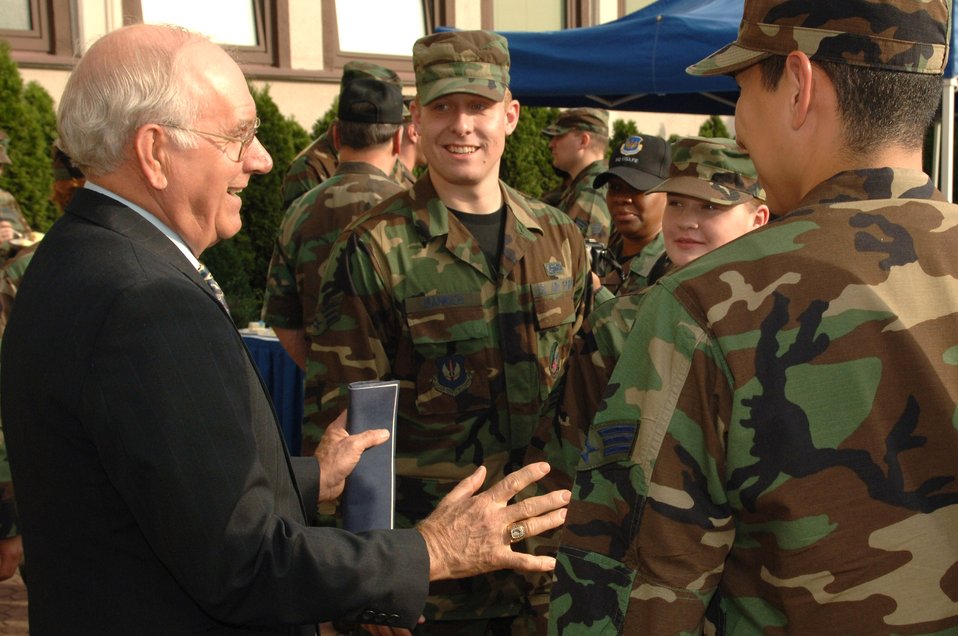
Enlisted heritage room pays tribute to CMSAF Parish

Former Chief Master Sergeant of the Air Force Sam E. Parish talks with Senior Airman Timothy Bankich (center) after a ceremony marking the opening of the Parish Enlisted Heritage Room that bears his name.